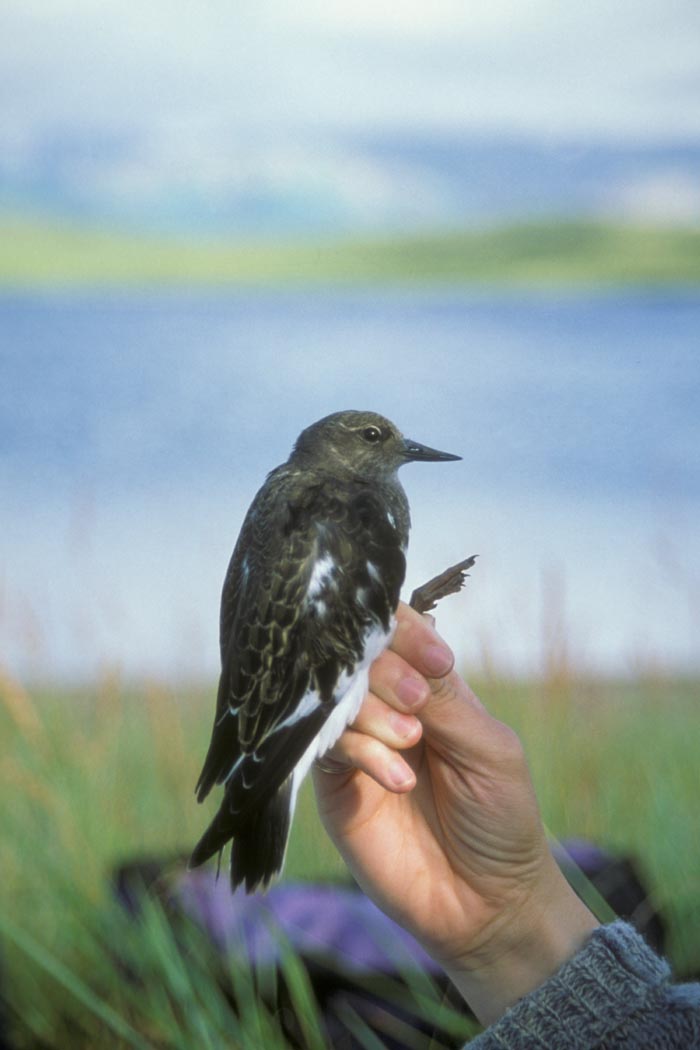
Black turnstone in hand

Image of Black turnstone in hand; from the Donna Dewhurst Collection.